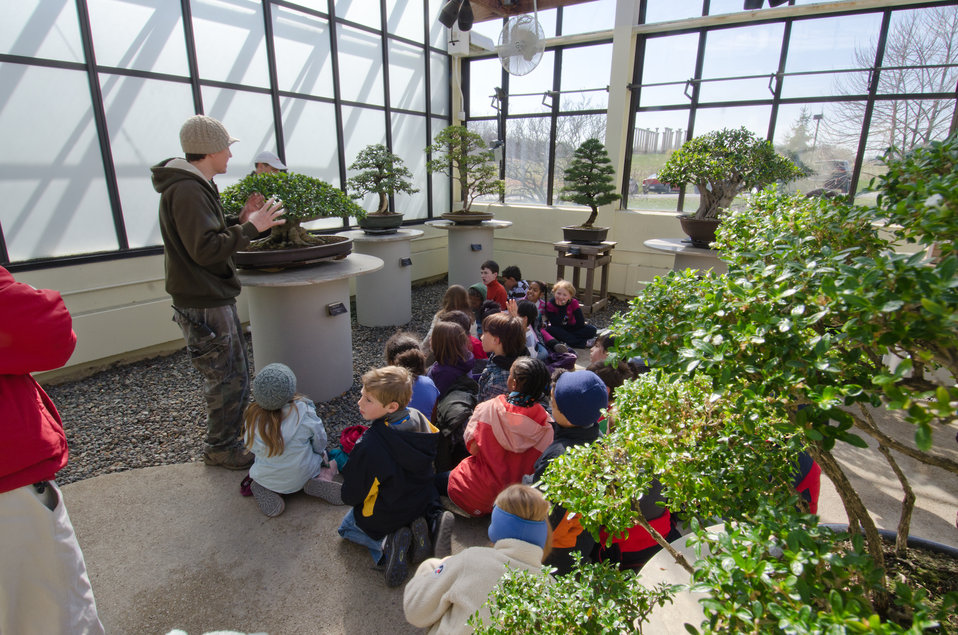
Assistant Curator Aarin Packard (green fleece jacket and knit cap) talks to second grade students from Sidwell Friends School, Washington, DC, who visited the National Bonsai & Penjing Museum, in the U.S. Department of Agriculture, Agriculture Research Service's National Arboretum in Washington, DC, on March 29, 2011. Mr. Packard told the children of the many special needs of caring for bonsai trees, and that the trees are simply regular trees, in this case tropical mangrove trees that are kept warm, trained and controlled to grow in a small form. The trimming of trees are given great consideration over long periods of time before a major cut would be made. Packard also expressed that the trees may be small but they are often hundreds of years old. Before the tour, he did some research and found that one of the bonsai trees was donated by Princess Chichibu of Japan, a 1928 alum of Sidwell Friends School.